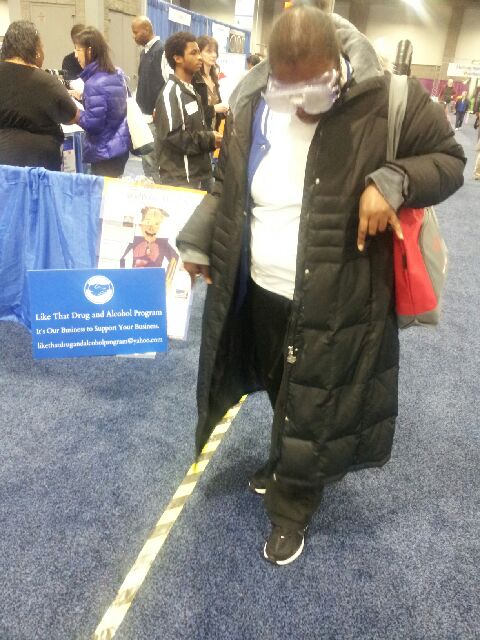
NBC4 Health and Wellness Expo January 11-12, 2014